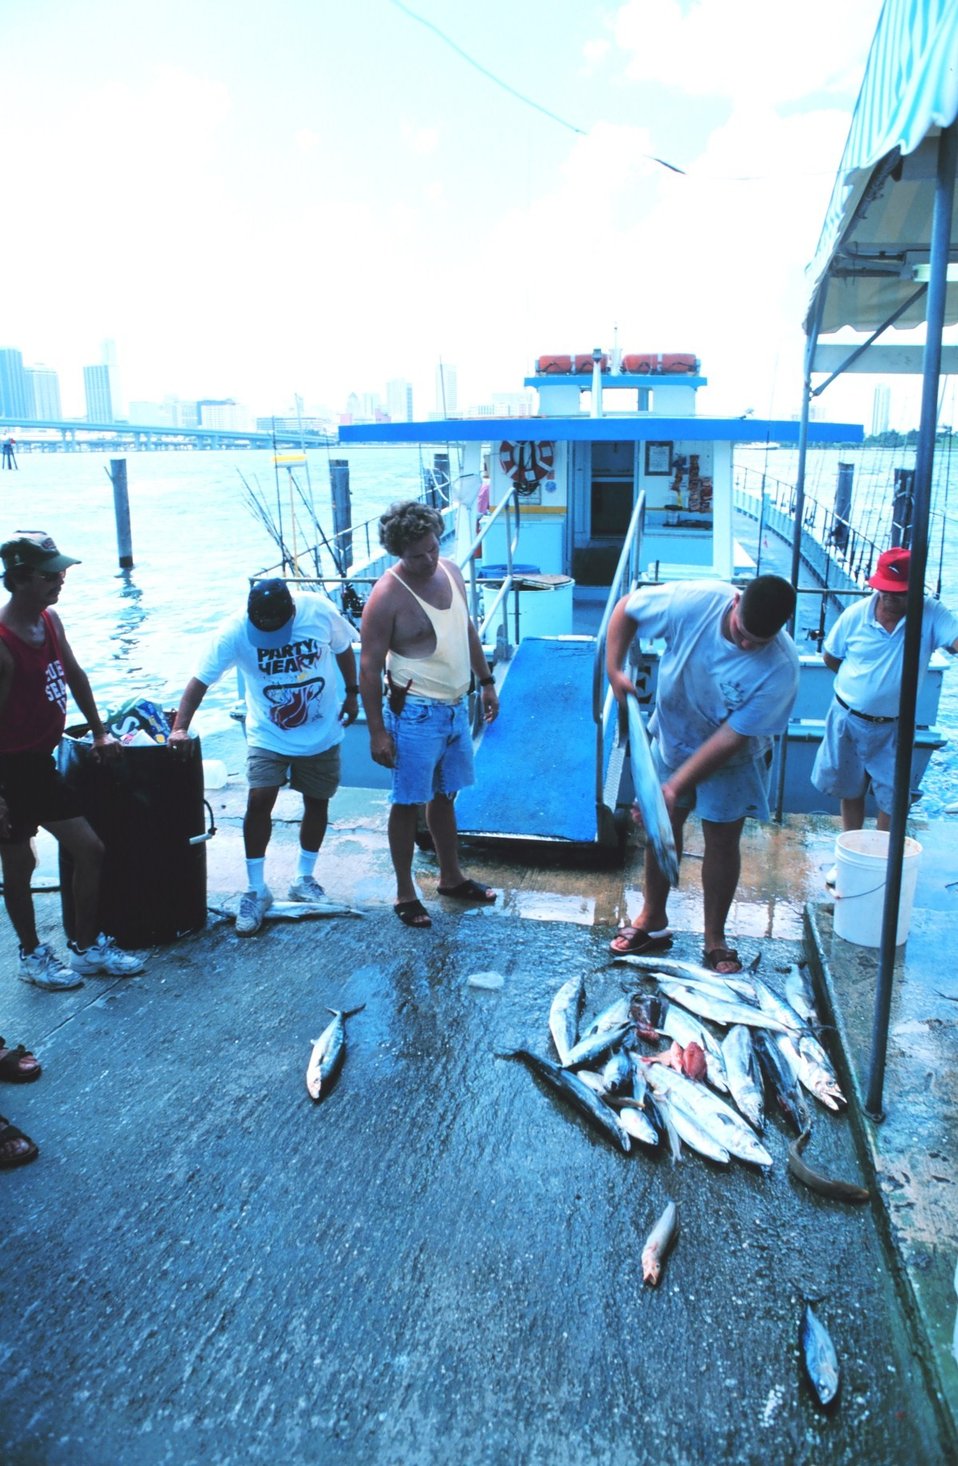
King and Spanish mackerel being offloaded from a charter boat